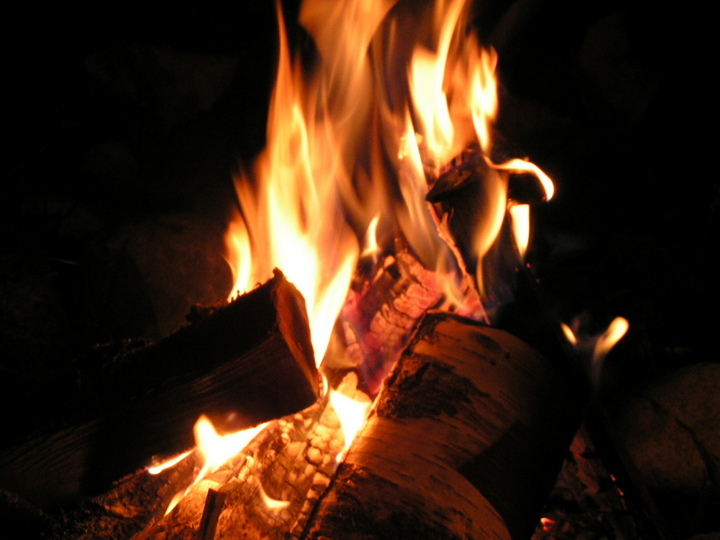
Lietuvių: Ugnis